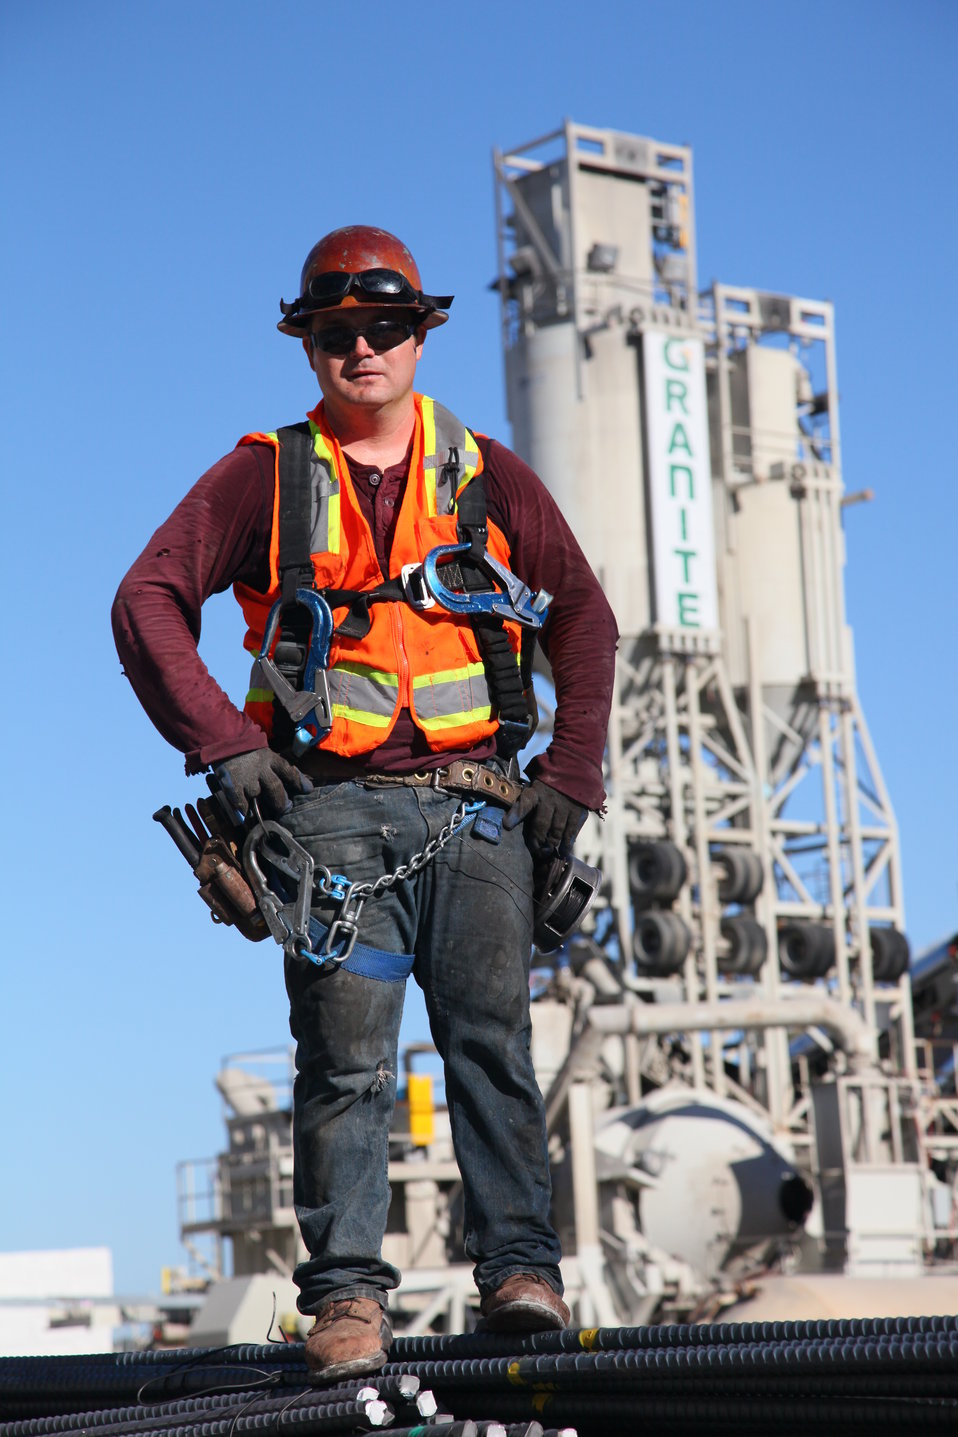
Rebar, Concrete Cooling and GPS

A contractor for the U.S. Army Corps of Engineers Sacramento District stands atop of a delivery of rebar to be used in concrete placement for the auxiliary spillway at the Folsom Dam Joint Federal Project in Folsom, Calif., June 20, 2012. The project is a joint effort of the Corps, U.S. Bureau of Reclamation, the Central Valley Flood Protection Board and the Sacramento Area Flood Control Agency to improve the safety of the current dam and reduce flood risk for the greater Sacramento area.